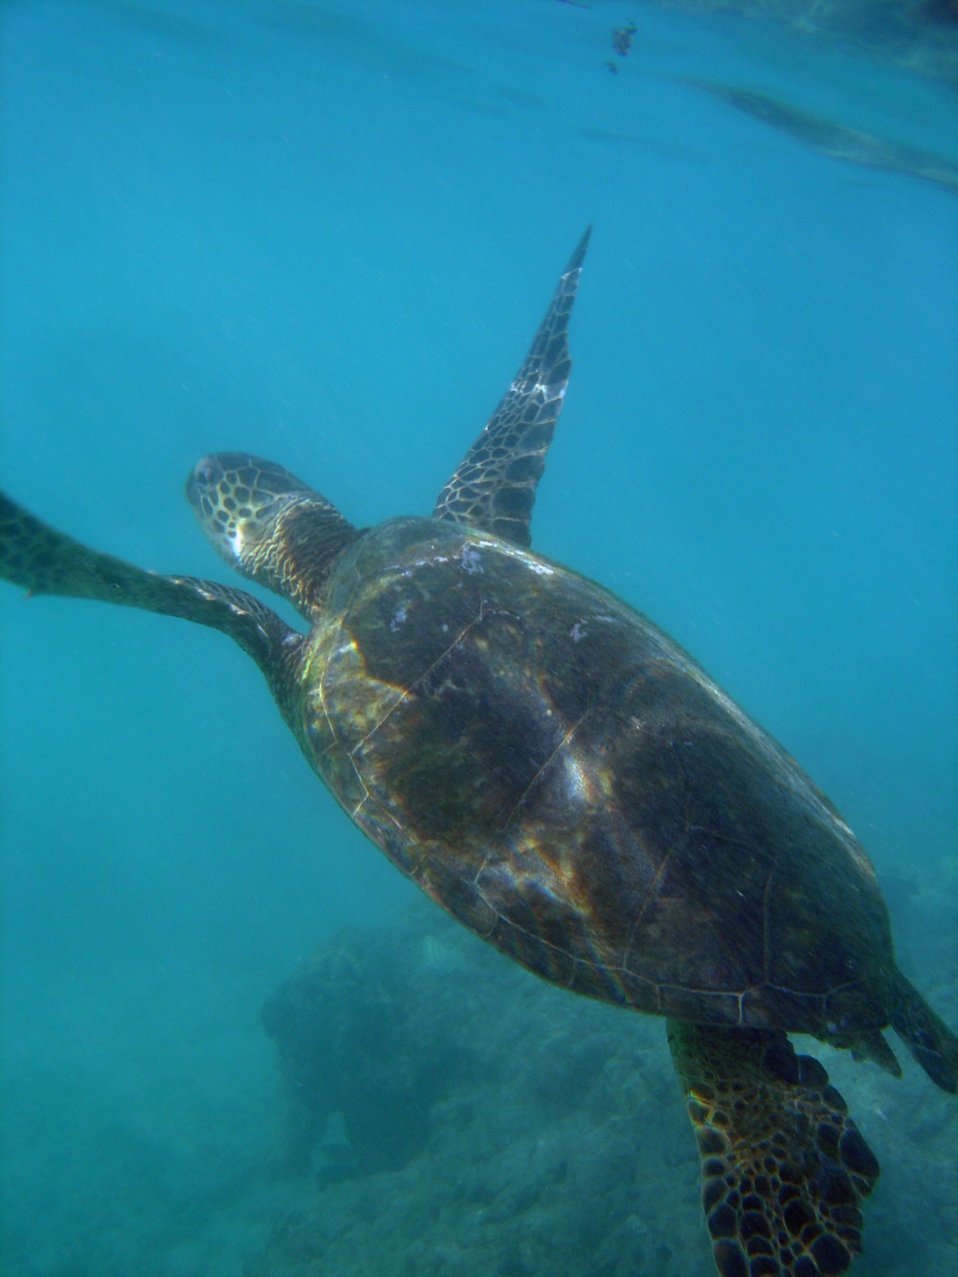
Green turtle swimming